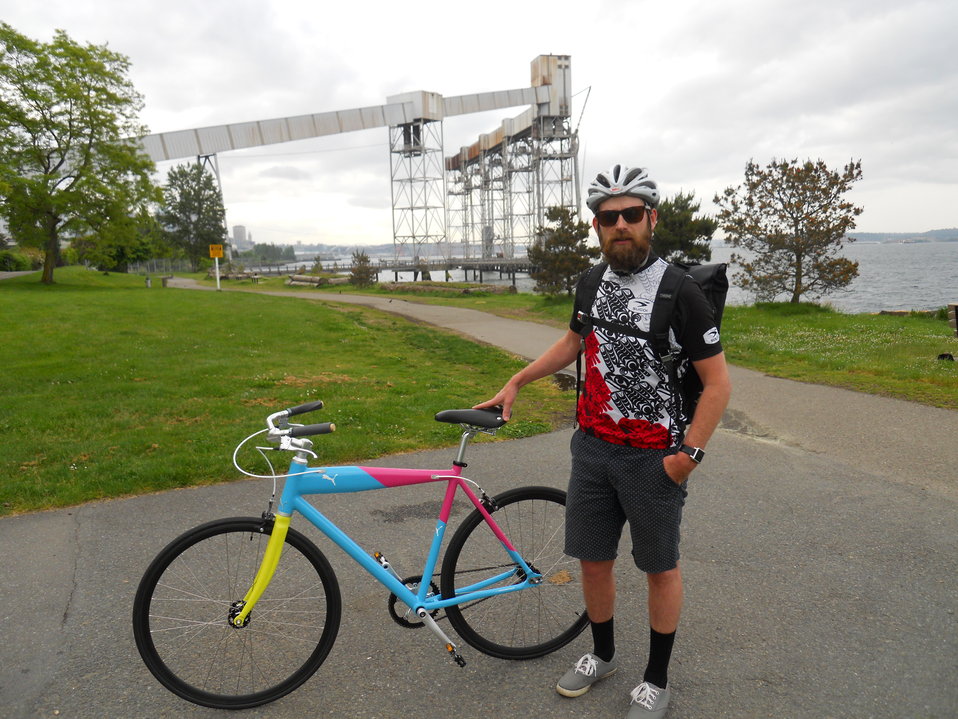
EPA Seattle Bike-To-Work Day 2014

Seattle area commuters show off their rides at EPA’s Bike-to-Work Day station.